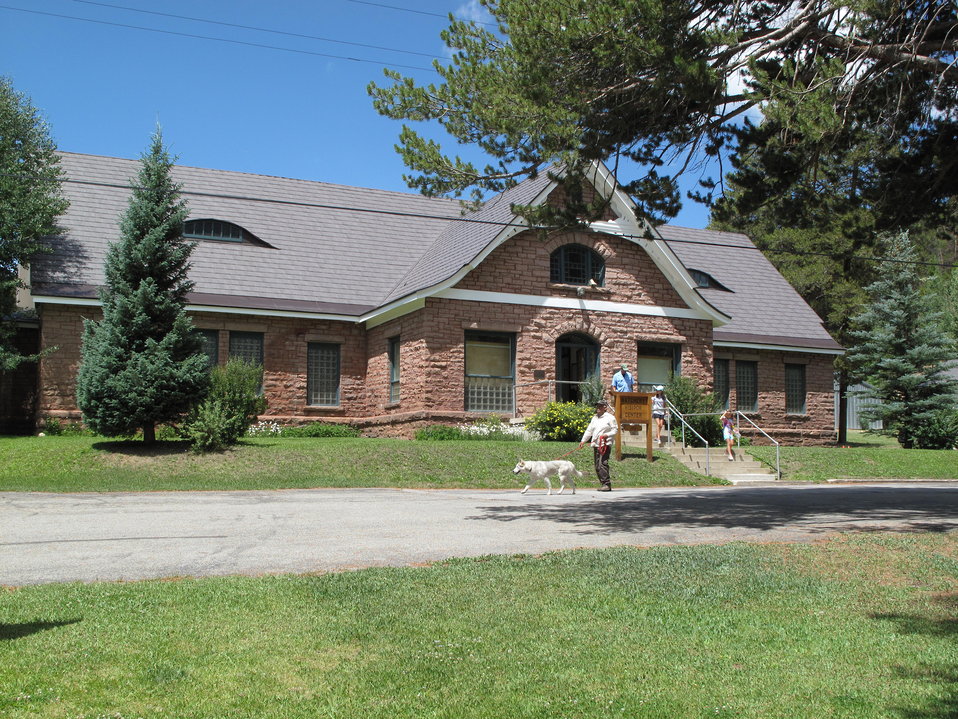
Leadville National Fish Hatchery

This is the hatchery visitor center where all the historical information and the indoor raceways are located.